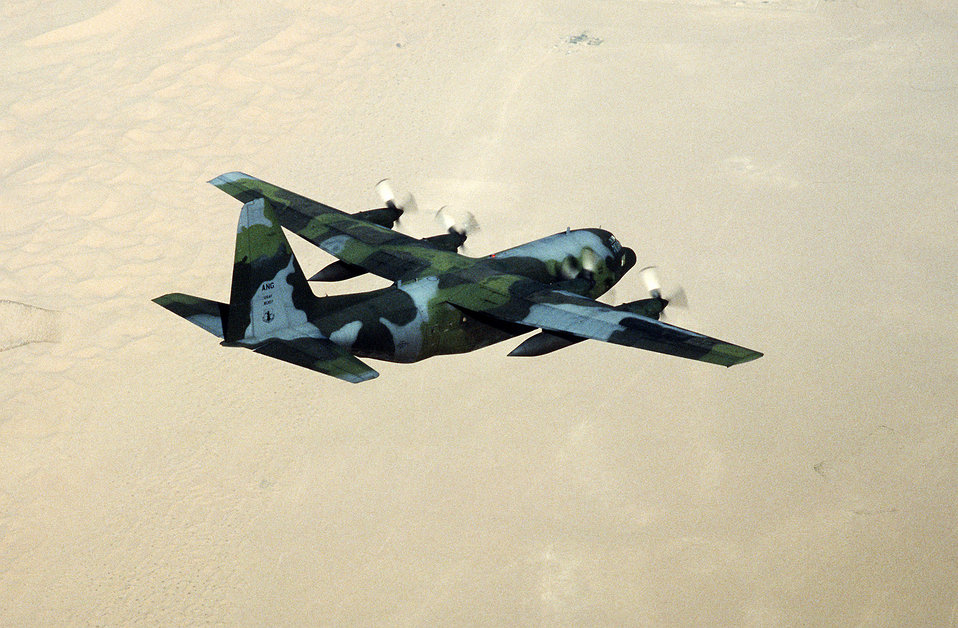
C-130 Hercules

1990's -- A C-130 Hercules transport aircraft from the West Virginia Air National Guard flies over the United Arab Emirates during a troop-carrying mission in support of Operation Desert Storm. The aircraft is assigned to the 1630th Tactical Airlift Wing.